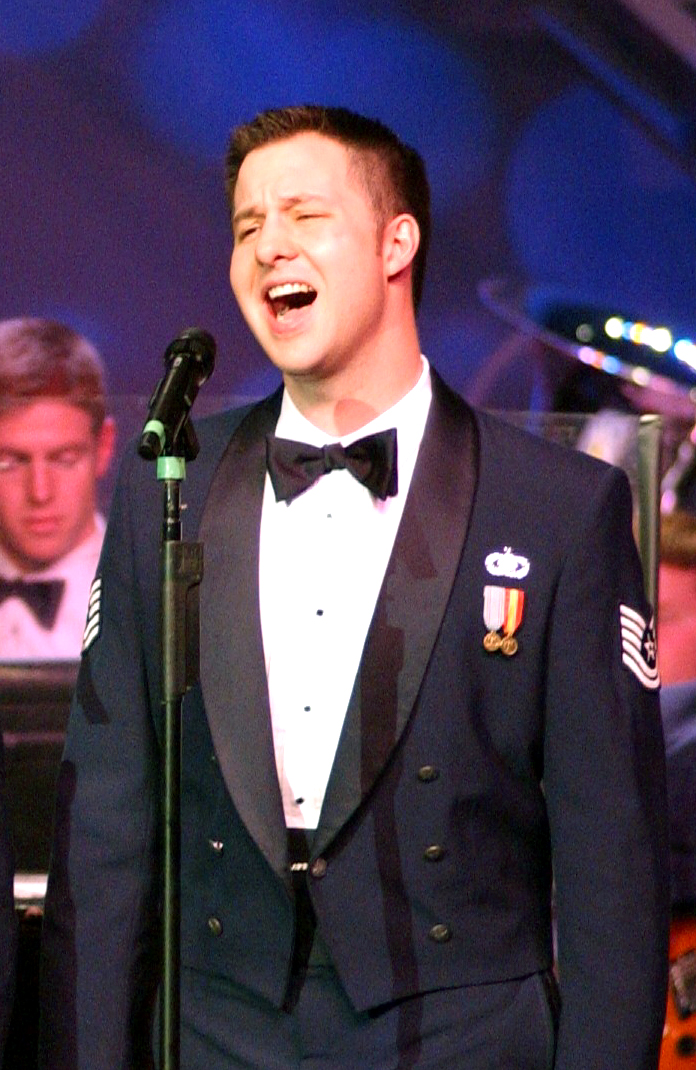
Airman making 'inaugural' performance

Tech. Sgt. Bradley Bennett